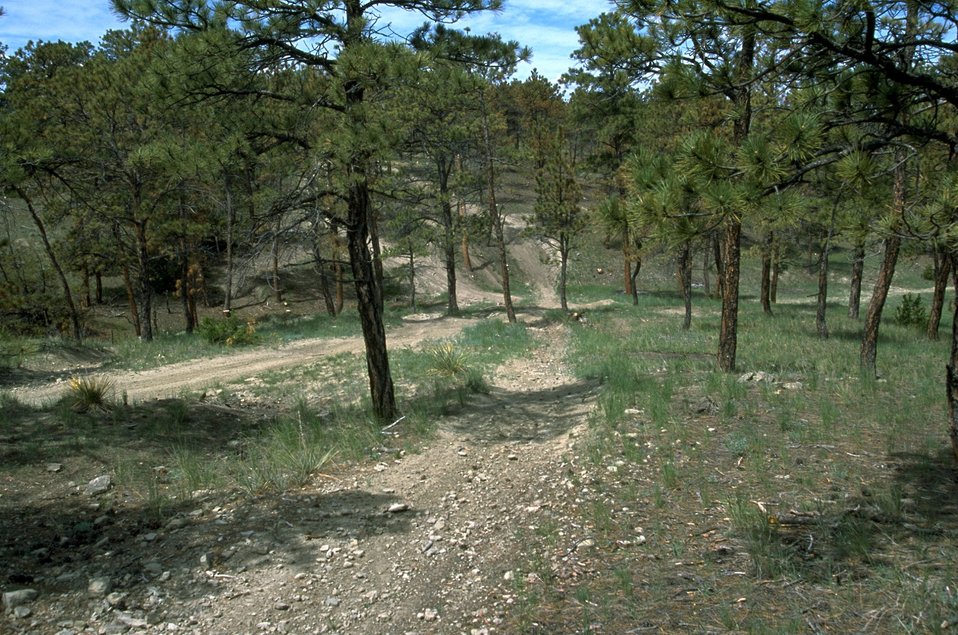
Off Highway Vehicle (OHV) trails in Area 1 in the Shepherd Recreation Area